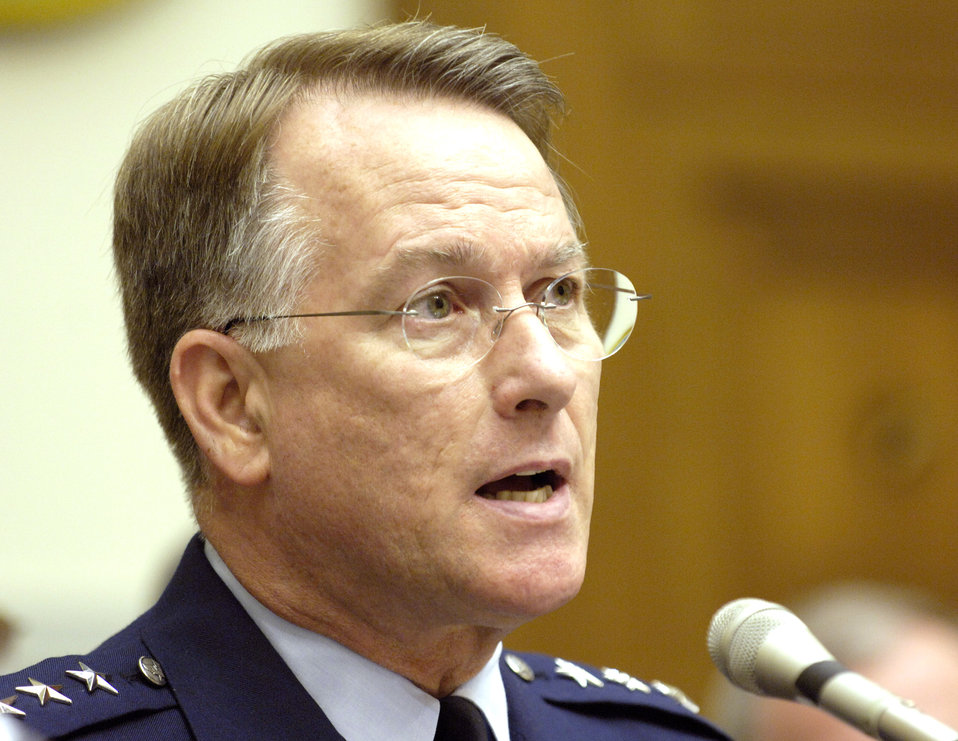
Future Total Force testimony

WASHINGTON -- Lt. Gen. John A. Bradley answers questions about the Air Force's future total force initiative during a hearing before the House Armed Services Committee July 20. The goal of the future total force initiative is to maximize Air Force capabilities by identifying emerging relevant missions for the active-duty component, the Air National Guard and the Air Force Reserve as a total force team. General Bradley is chief of Air Force Reserve and commander of the Air Force Reserve Command.